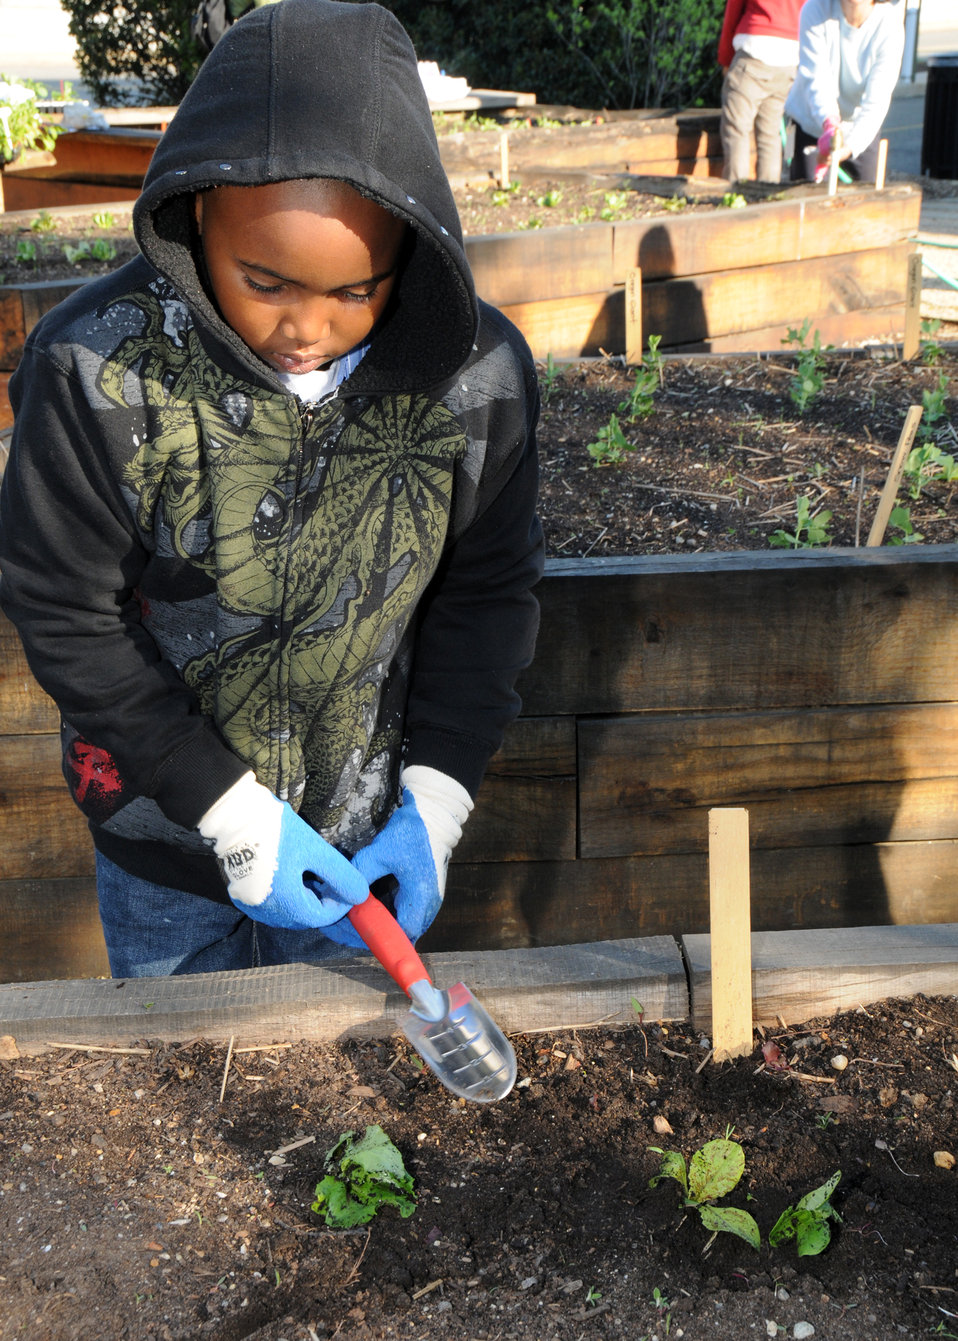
Young people from the non-profit Jubilee Housing organization’s after school youth services program help U.S. Department of Agriculture (USDA) employees plant vegetables and herbs in the People’s Garden on Friday, Apr. 9, 2010. The Jubilee Youth Services offers a safe place for learning and fellowship for young people through a supervised after-school program. The after-school program provides academic support, enrichment activities, healthy life skills, teen leadership development and community service opportunities. The young people at Jubilee Housing have their own garden on site. USDA photo 10di1300-161